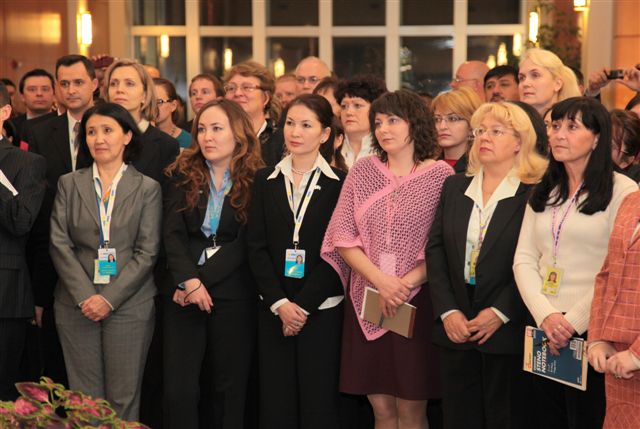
Members of the U.S. Embassy Astana Listen to Secretary Clinton

U.S. Embassy Astana staff and their families listen to U.S. Secretary of State Hillary Rodham Clinton in Astana, Kazakhstan, on December 1, 2010.